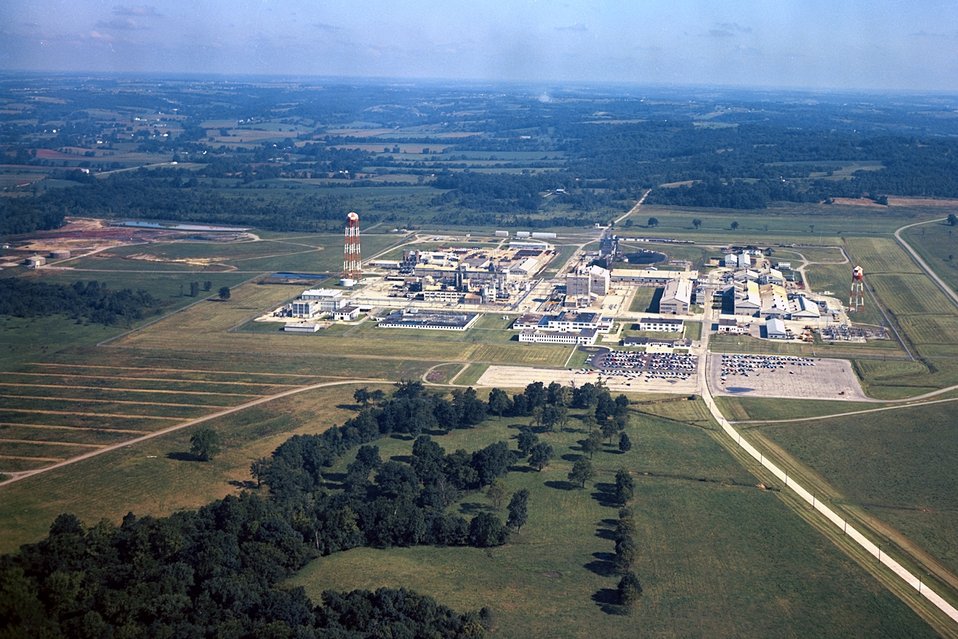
Fernald Production-era Aerial

Fernald (before)